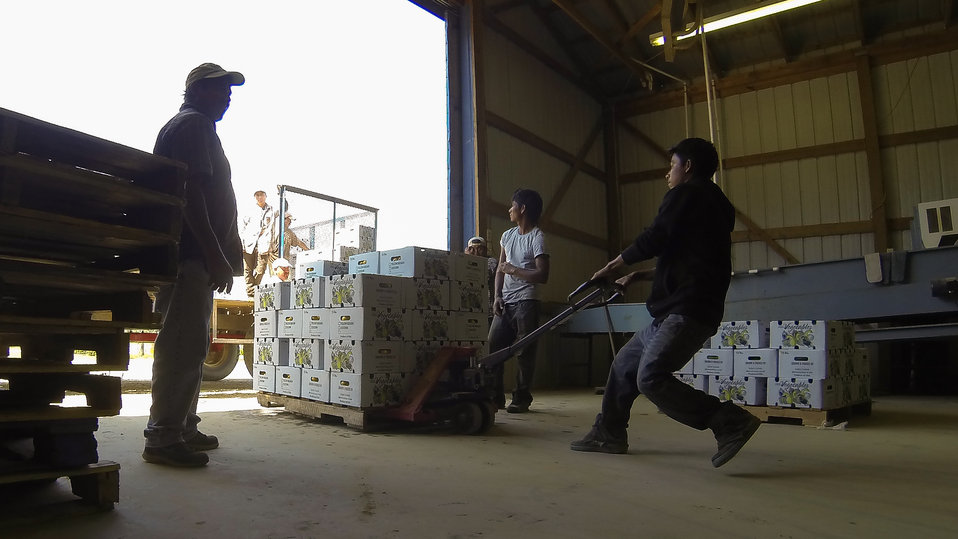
Fresh packed squash is transferred from processing trailer to pallets that will be loaded onto a waiting tractor-trailer rig for shipment at Kirby Farms in Mechanicsville, VA on Friday, Sept. 20, 2013. Kirby Farms devotes 200 acres of the farm to eggplant, spinach, beets, tomato, jalapeno peppers, melons and a variety of greens. Soybeans and small grain are grown on the remaining 300 acres. The fertile Virginia soil and their management practices, allows Kirby Farms to double and triple crop fields with rotational crop selection. Wholesalers, who buy from this farm, sell the produce to major supermarkets in the Mid-Atlantic region, from North Carolina to Maryland. Restaurants in the local area prepare and serve their harvest to patrons in the Greater Richmond, VA Region.